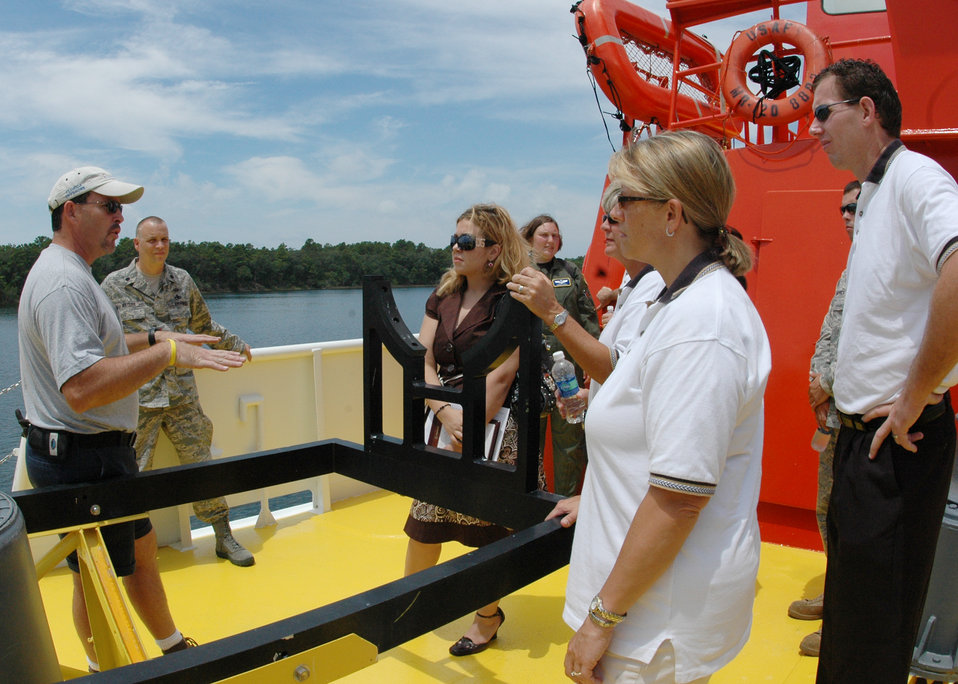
Drone recovery

Jon Wys talks to honorary Eglin Air Force Base, Fla.,